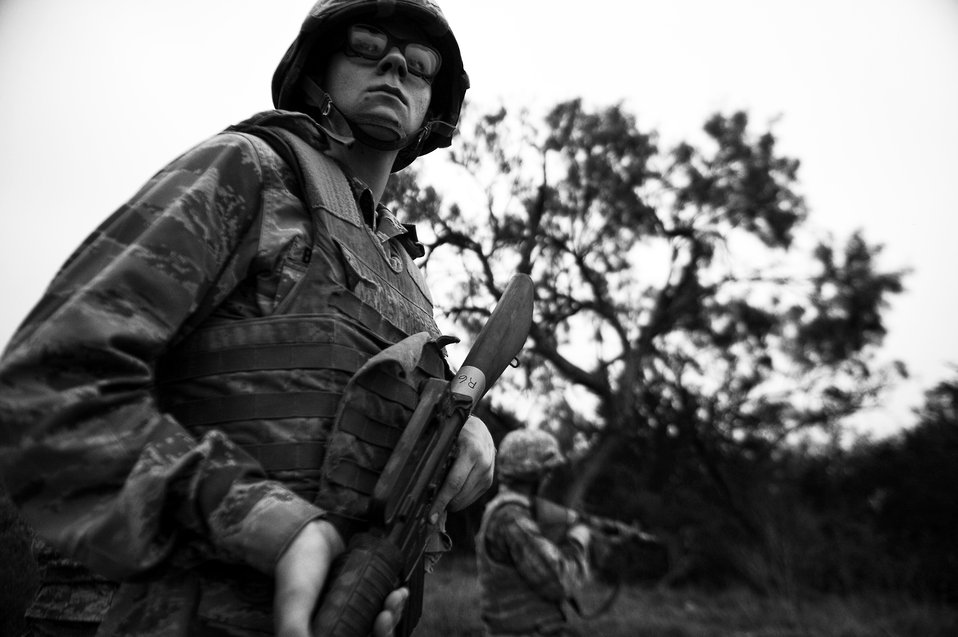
BEAST

Basic trainees go through their sixth week of Air Force basic military training at the Basic Expeditionary Airman Skills Training on May 25, 2011, at Lackland Air Force Base, Texas.